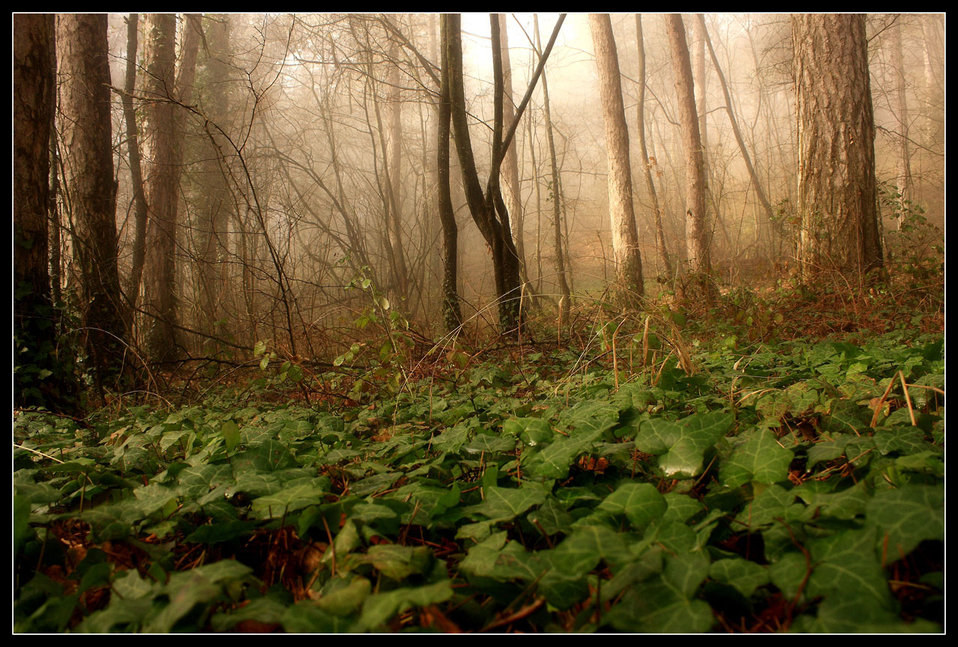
Forest in fog

Forest in the mist.